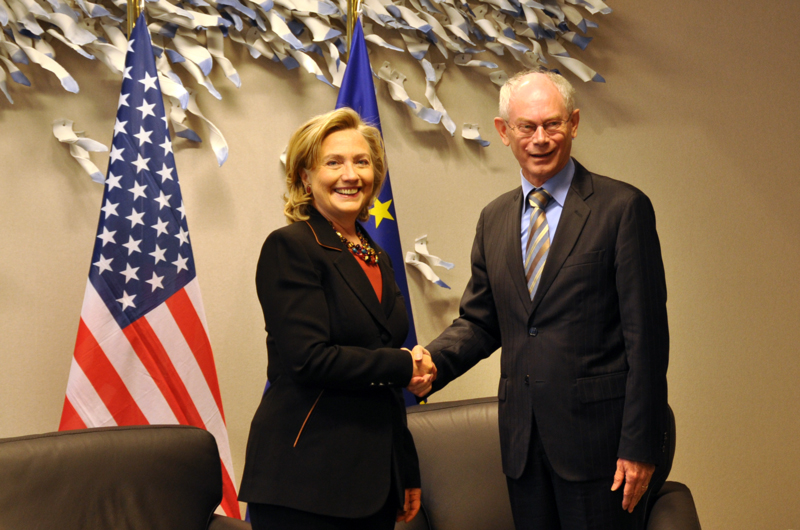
Secretary Clinton Meets With European Council President Herman Van Rompuy

U.S. Secretary of State Hillary Rodham Clinton meets with the President of the European Council Herman Van Rompuy in his office at Justus Lipsius building in Brussels, Belgium, on October 14, 2010.